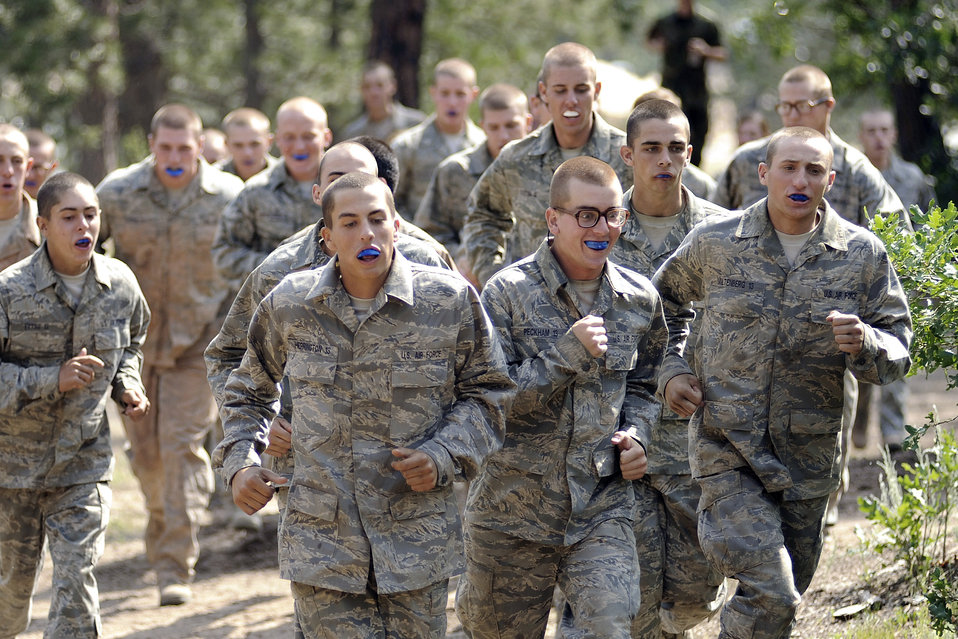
Academy basic field training at Jacks Valley

Air Force Academy basic cadets sprint to their next tasking July 21 in Jacks Valley near Colorado Springs, Colo. Basic cadet training started June 25 and continues through Aug. 1.